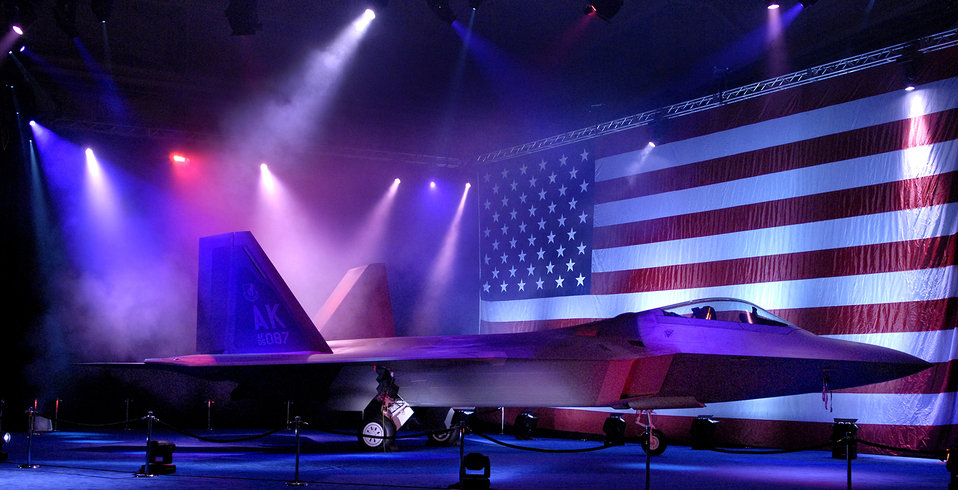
First F-22 bound for Pacific unveiled

Representatives from the Air Force and Lockheed Martin gathered to see the roll-out of Pacific Air Forces' first F-22 Raptor Feb 12 at Marietta, Ga. This F-22 is the first of several that will be assigned to PACAF at Elmendorf Air Force Base, Alaska. The F-22 aerodesign, advanced flight controls, thrust vectoring, and high thrust-to-weight ratio provide the capability to outmaneuver all current and projected aircraft.